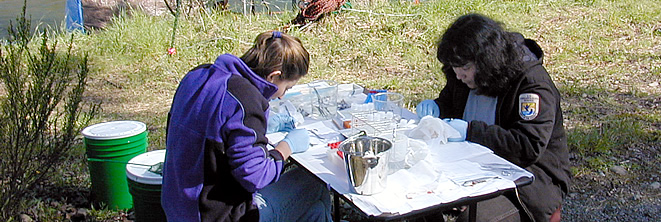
Staff analyzing fish - Olympia Fish Health Center